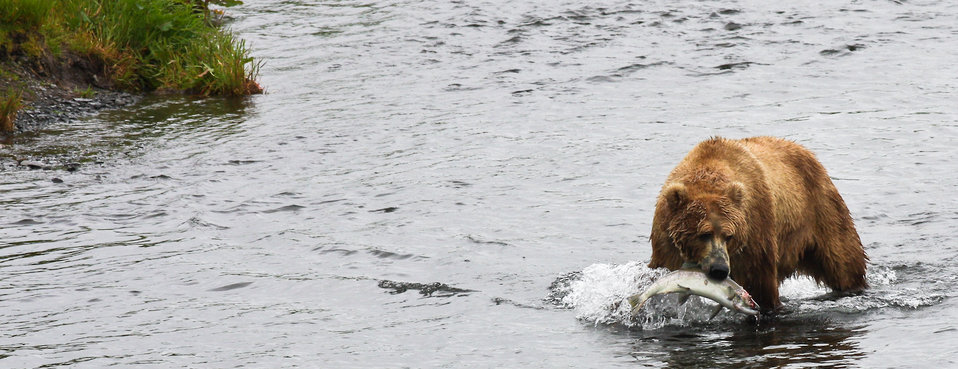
Fishing for Sockeye

Kodiak brown bear with sockeye salmon. Dog Salmon River.
Lisa Hupp/USFWS